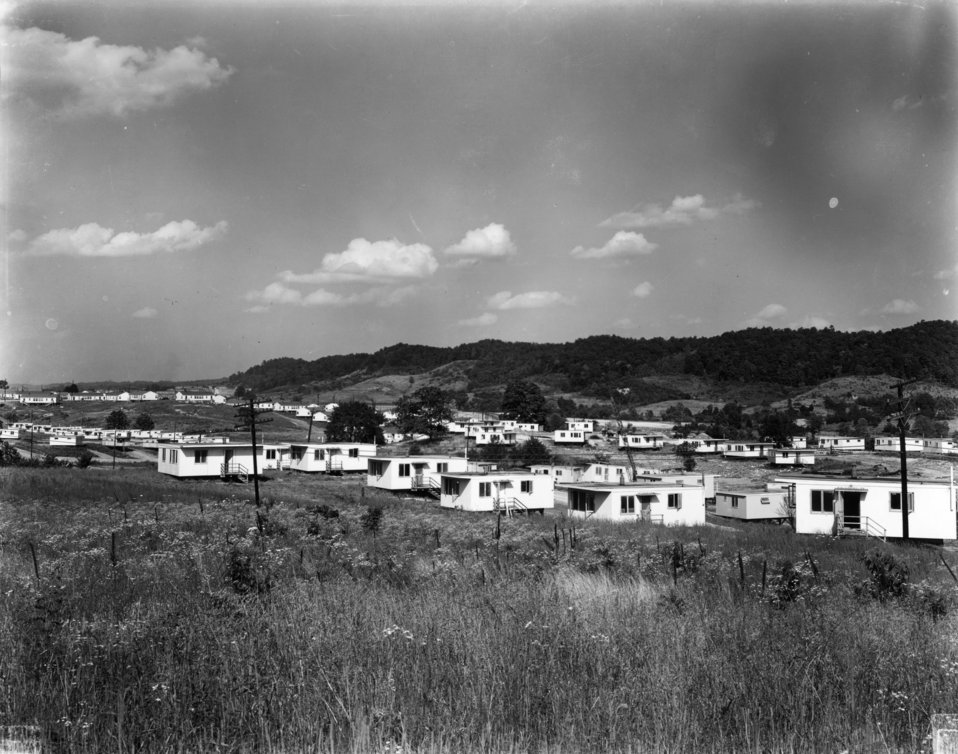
Housing at Oak Ridge